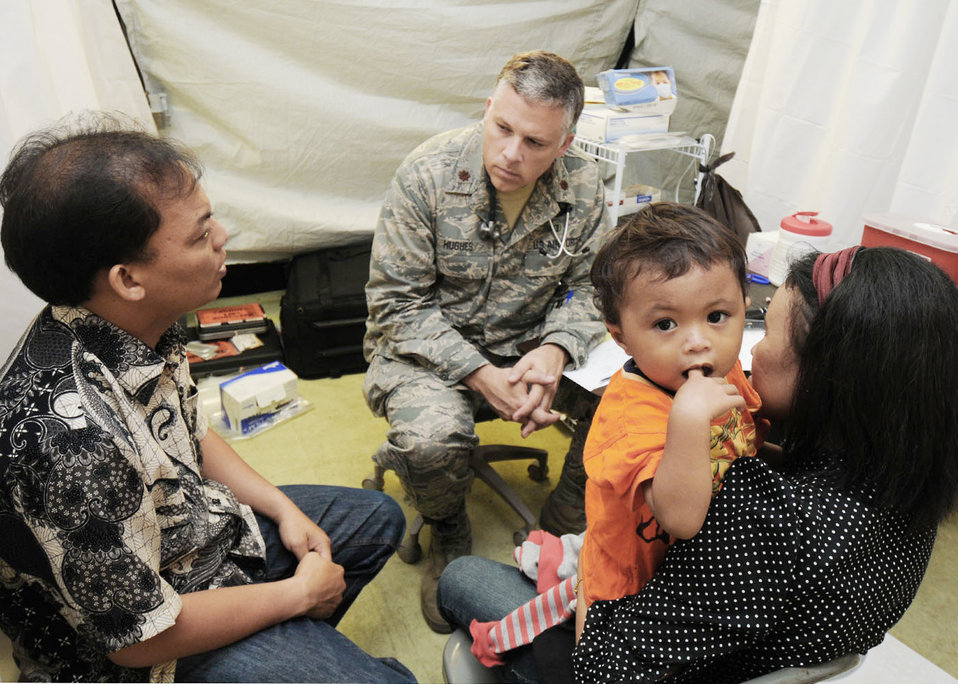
Interpreters key to Air Force efforts in Indonesia

Maj. Scott Hughes gathers medical information from a patient with the help of Hasbi, a local interpreter, Oct. 10, 2009, in Padang, Indonesia. Major Hughes is a doctor from the 36th Medical Group at Andersen Air Force Base, Guam, and is deployed here with a U.S. Air Force humanitarian assistance rapid response team to provide medical assistance to those affected by the recent earthquakes.